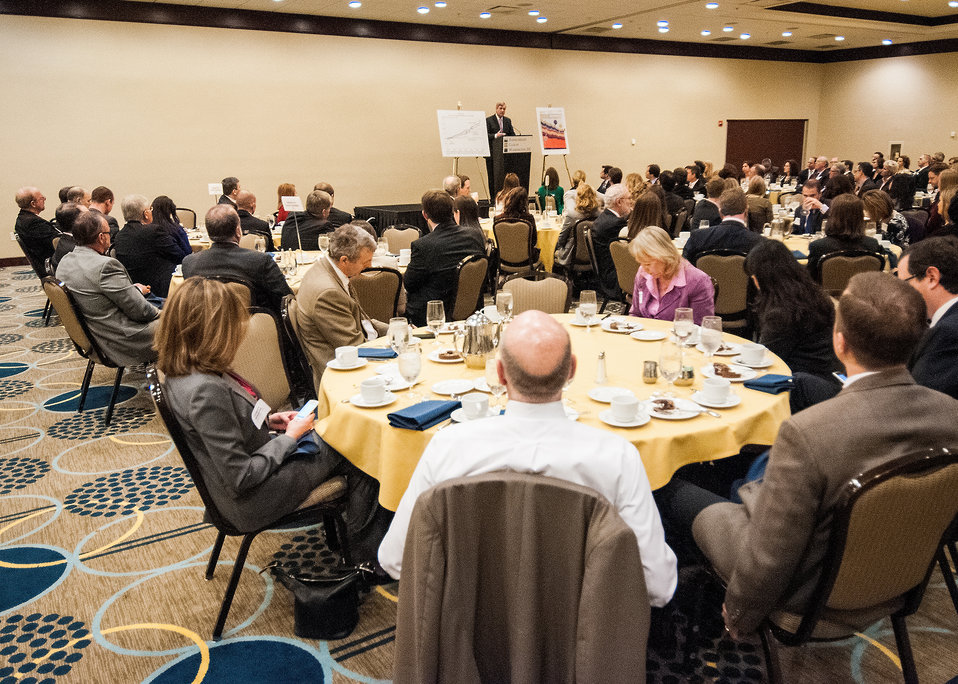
Agriculture Secretary Tom Vilsack spoke to the Agribusiness Club of Washington, D.C. on National Agriculture Day, Tuesday, Mar. 19, 2013. Secretary Vilsack discussed his four cornerstone priorities for the new rural economy – with special focus on building new markets for production agriculture and local/regional marketing of food.